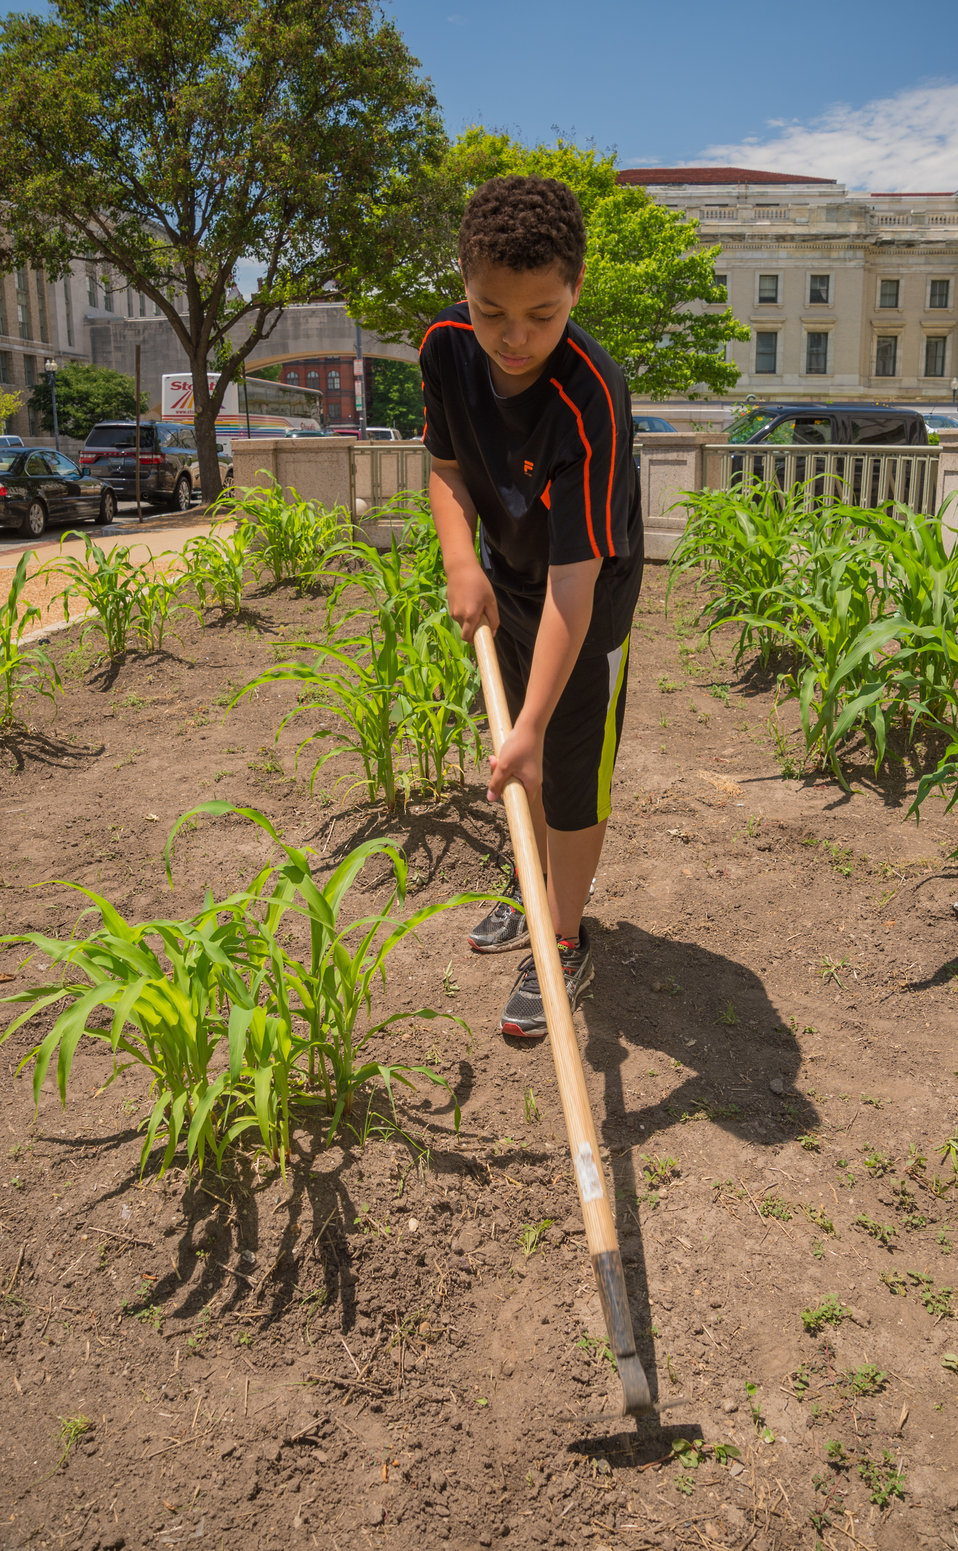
Nathan Novetsky, a seventh grade student from Alice Deal Middle School volunteered weeding and planting the Three Sisters Garden at the United States Department of Agriculture (USDA) People’s Garden, on Wed. Jun. 4, 2014 in Washington, DC. The garden is named the Three Sisters Garden for the three crops grown in the garden, corn, beans and squash. Corn the first sister is the tallest representing strength, beans the second sister climb and need the support of the first sister and provide nitrogen for the crops and squash the third sister protect others from sun and animals. The USDA’s Faith Based and Neighborhood Partnerships office sponsored the event.